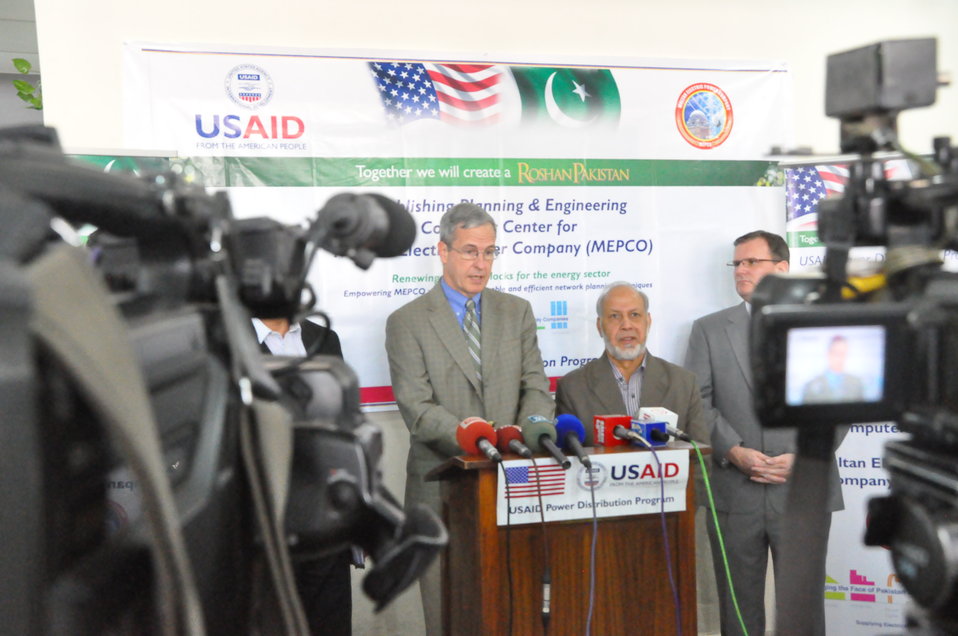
USAID equips MEPCO with state-of-the-art Planning and Engineering Computer Center

“This is a crucial step in helping MEPCO grow as an independent power distribution company in the region. I am confident that with this effort, the company will now be better able to supply electricity to its consumers.”
USAID Pakistan Mission Director
Jonathan Conly